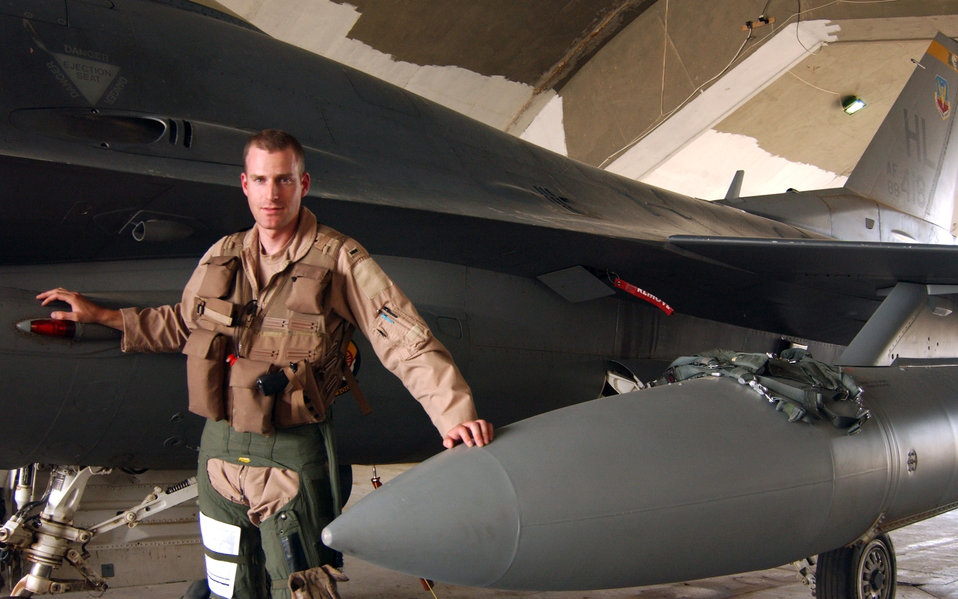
A potential for disaster

First Lt. Michael Seltzer stands with the jet that malfunctioned at the end of a mission he flew recently over Iraq. Lieutenant Seltzer is an F-16 Fighting Falcon pilot assigned to the 421st Expeditionary Fighter Squadron.